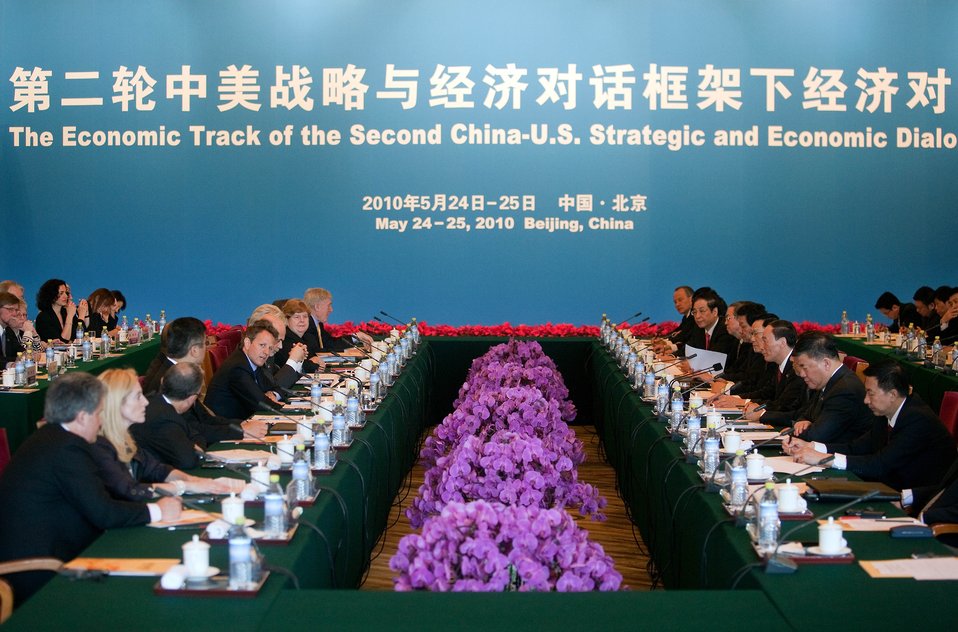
SandED, 5/24/10

Meeting of the Economic Track of the 2nd U.S.-China Strategic and Economic Dialogue on May 24, 2010.